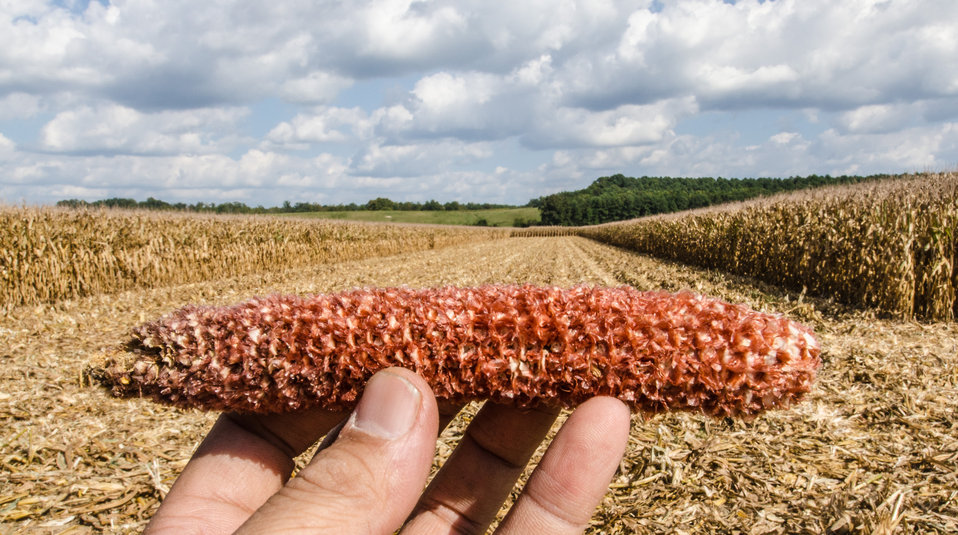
Feed corn after being fed into the corn harvester, during the harvest at the John N. Mills & Sons farm; a family owned business located in the Hanover and King William Counties Virginia, on Friday, Sept. 20, 2013. Pleasant Level Farm was the original farm from a Land Grant from King George III of England to Nicholas Mills in 1725. The original acreage has never left the Mills family name and continues to be farmed by the family.
Now the farm covers 5,744 acres that produce corn, wheat, soybeans, barley, hay, timber, and pastures a large herd of beef cattle. They have been using conservation and stewardship practices since the 1960s. Some of the efficient practices include no-till planting and cover crops to reduce soil erosion and prevent the leaching of nutrients into ground water, as well as livestock stream exclusion. The farm has several conservation easements that aids in the preservation and restoration of wetlands and waterways. For information about the U.S. Department of Agriculture (USDA), please go to www.usda.gov.